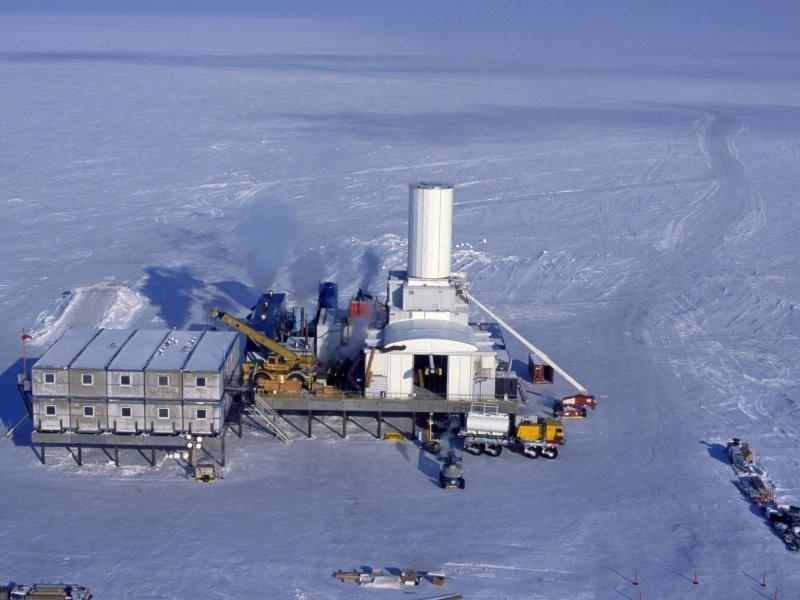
AERIAL VIEW OF THE ARCTIC DRILLING PLATFORM ON ALASKA'S NORTH SLOPE.

THE ARCTIC DRILLING PLATFORM, DEVELOPED BY ANADARKO PETROLEUM CORPORATION OF HOUSTON TEXAS, WAS INSTALLED AT A SITE 60 MILES WEST OF DEADHORSE, ALASKA. THIS PLATFORM, A NEW CONCEPT FOR PROTECTING FRAGILE ECOSYSTEMS, IS BEING USED FOR THE FIRST TIME IN THE UNITED STATES TO DRILL FOR METHANE HYDRATES, A POTENTIALLY IMMENSE SOURCE OF ENERGY. THE PROJECT IS PART OF A PARTNERSHIP BETWEEN THE DEPARTMENT OF ENERGY, ANADARKO, MAUER TECHNOLOGY INC. AND NOBLE ENGINEERING AND DEVELOPMENT OF TEXAS.